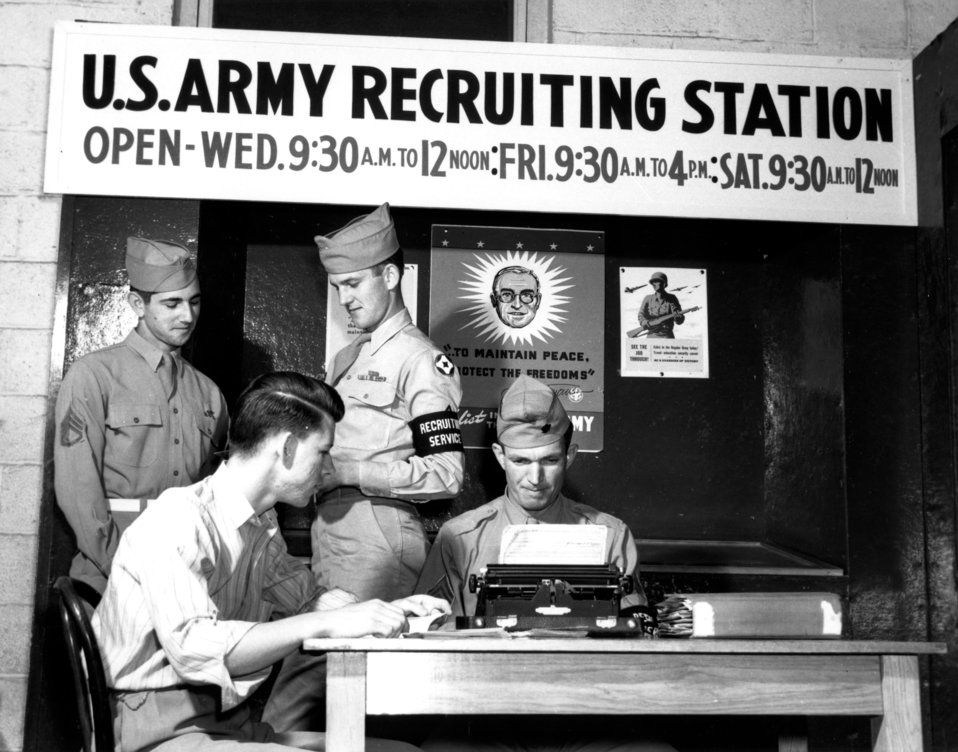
Army Activity at Oak Ridge